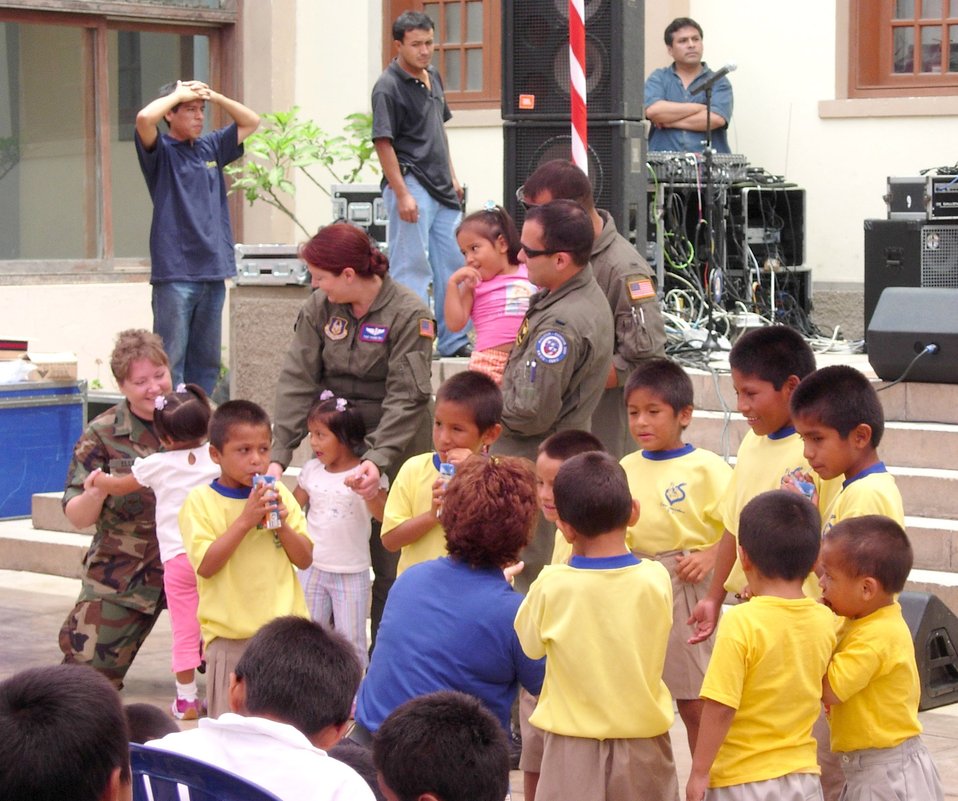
Airmen foster relations as ambassadors

Aircrew members visit with children at a local foster home in Lima, Peru Feb. 16. They are participating in joint exercise Falcon and Condor 2007. The joint exercise supports U.S. Southern Command's goals and furthers relations between the allied nations.